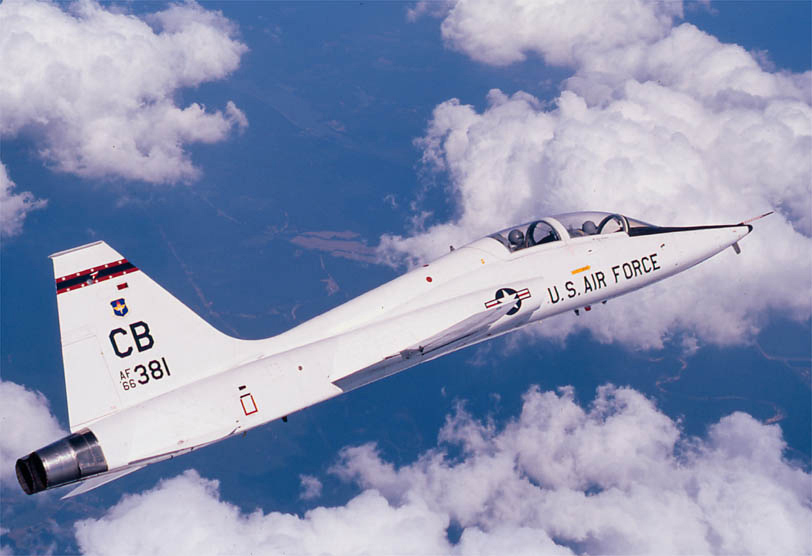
Talon

FILE PHOTO -- The T-38 Talon is a twin-engine, high-altitude, supersonic jet trainer used in a variety of roles because of its design, economy of operations, ease of maintenance, high performance and exceptional safety record. It is used primarily by Air Education and Training Command for undergraduate pilot and pilot instructor training. Air Combat Command, Air Mobility Command and the National Aeronautics and Space Administration also use the T-38 in various roles.